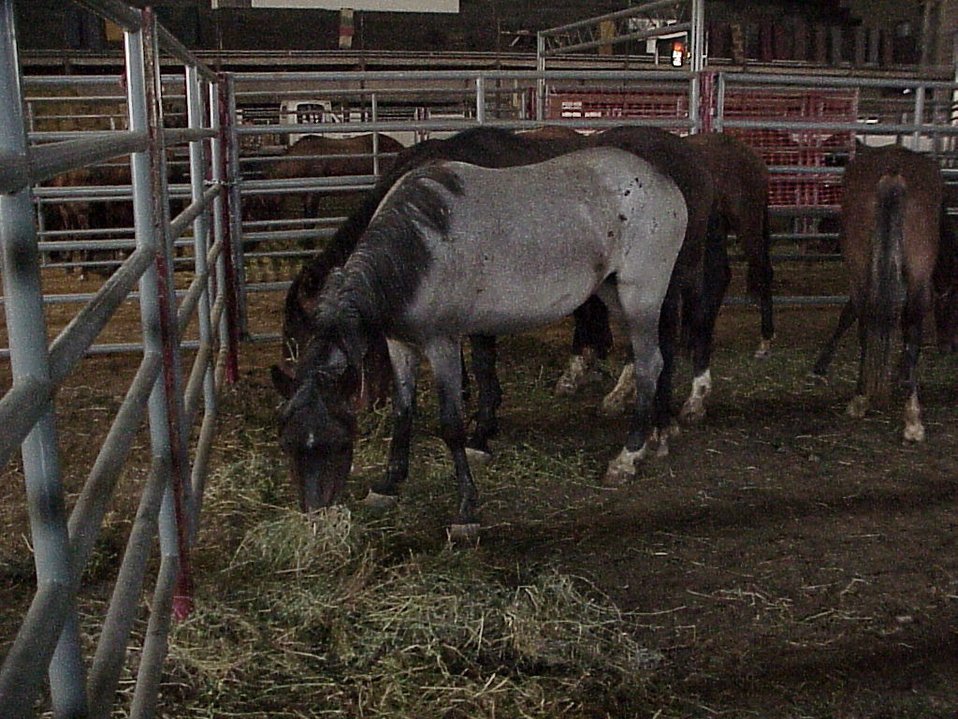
Horses Lewiston Wild Horse and Burro Adoption Program Auction WHB indoor auction Cottonwood Field Office UCSC Upper Columbia Salmon Clearwater District